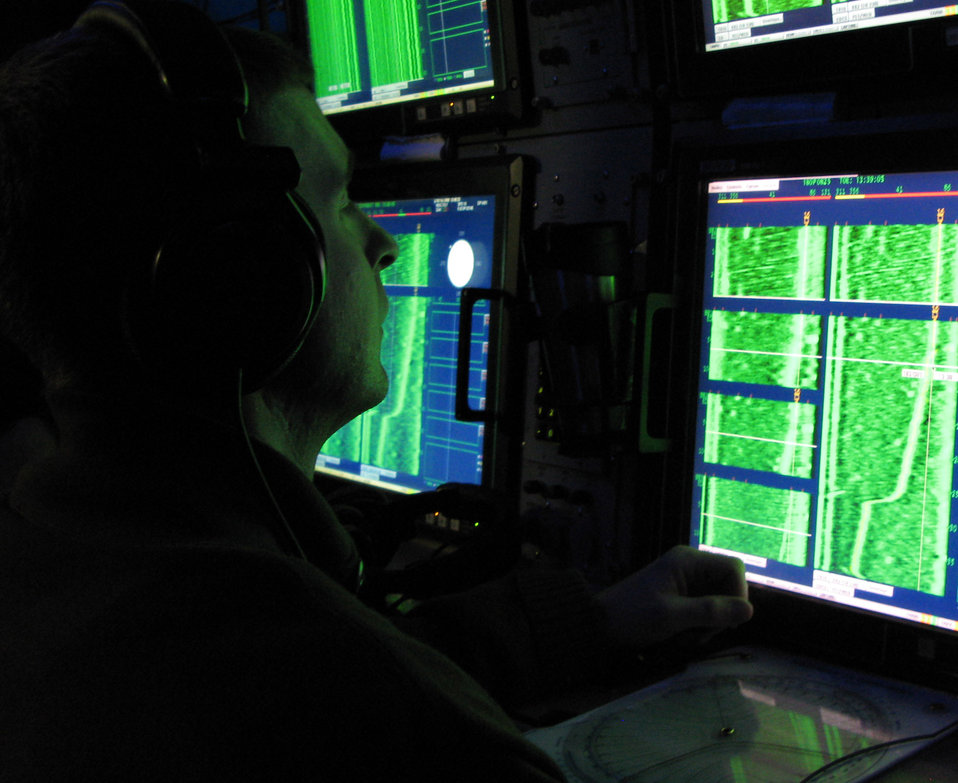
Trident submariners provide strategic deterrence

Navy Petty Officer 2nd Class Shawn Halliwell checks his sonar system during a battle drill Feb. 16 aboard the strategic missile submarine USS Maryland.